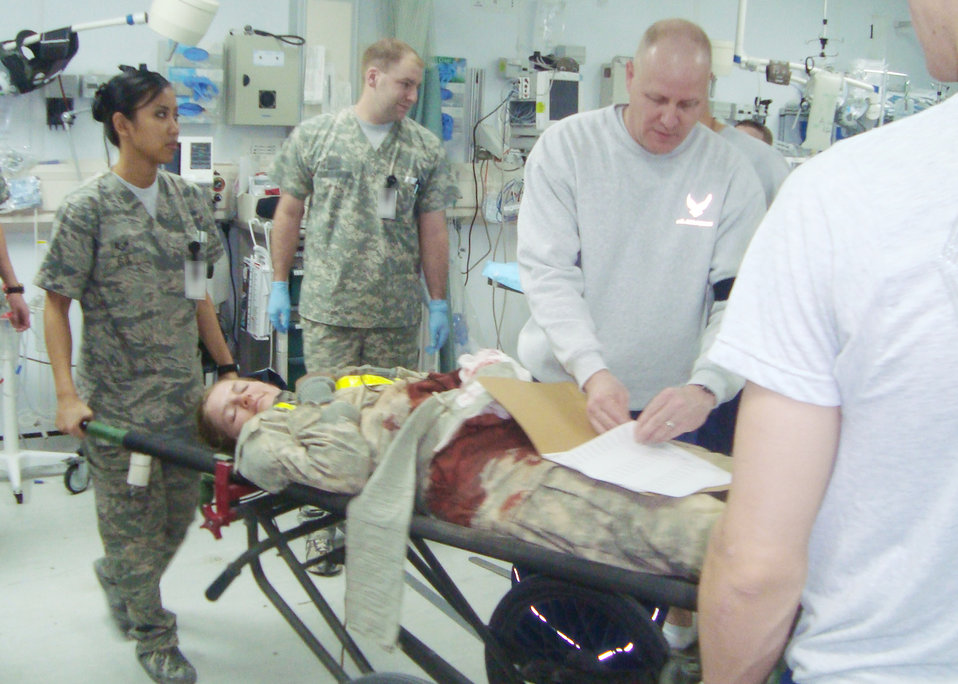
Exercise prepares Airmen for bloody Afghan marketplace attack

Airmen and Soldiers at the Craig Joint Theater Hospital tend to a simulated